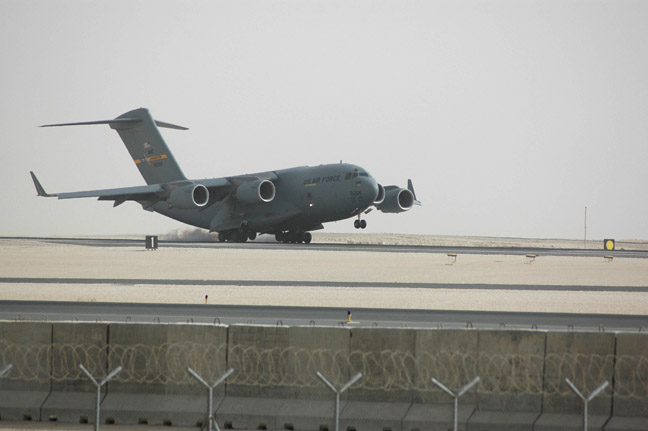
Sept. 15 airpower summary: C-17s transport troops, cargo

A C-17 Globemaster III, like this one, performs tactical airlift and airdrop missions, transports passengers and delivers troop supplies throughout Southwest Asia in support of Operations Enduring and Iraqi Freedom.